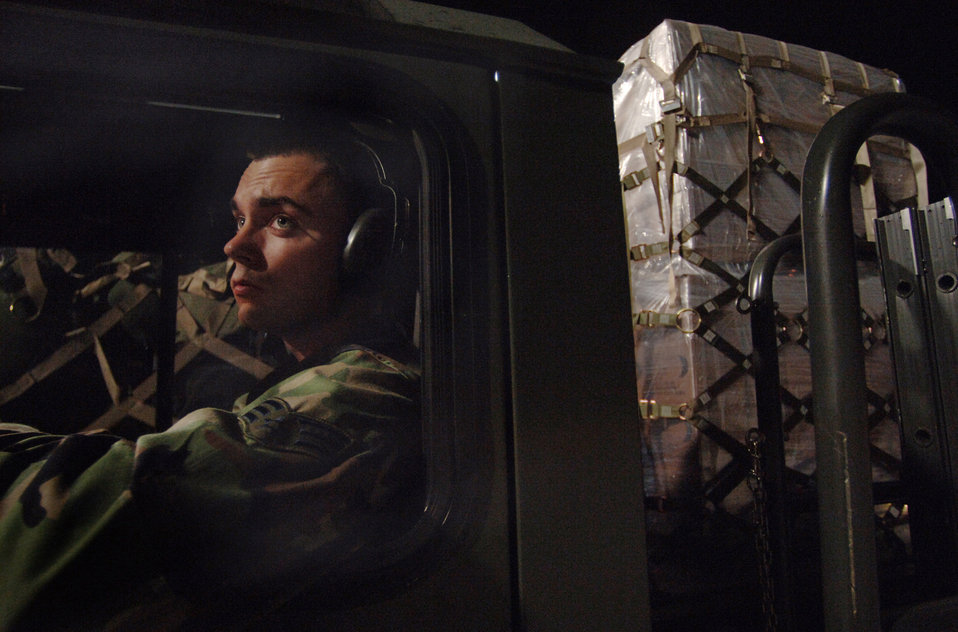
Precious cargo

Senior Airman John Meeker waits for a loadmaster to guide him and his cargo into the back of a C-130 Hercules Aug. 17 at Ramstein Air Base, Germany. The cargo is part of a wave of humanitarian supplies being delivered to Georgian citizens.